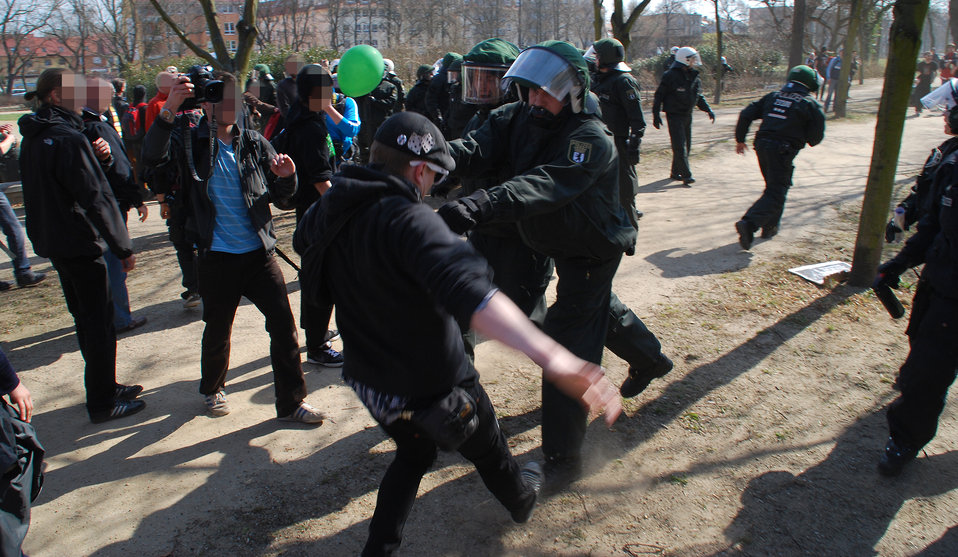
Proteste gegen den Nazi-Aufmarsch am 24.3.2012 in Frankfurt (Oder)